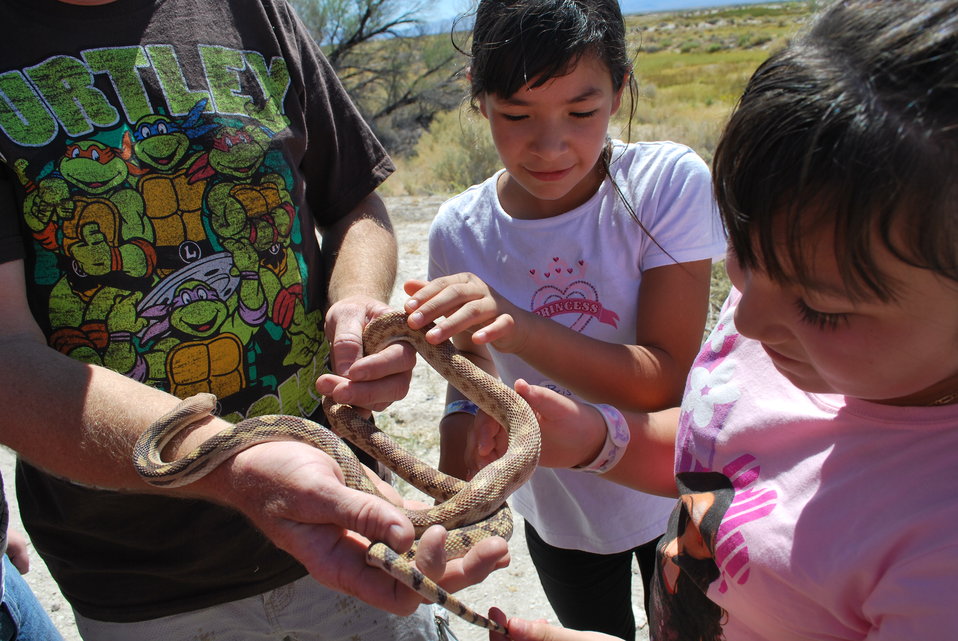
Touching the gopher snake

Kids have fun learning about gopher snakes, which are commonly seen in their hometown, Amargosa Valley, Nevada. Cyndi Souza/USFWS